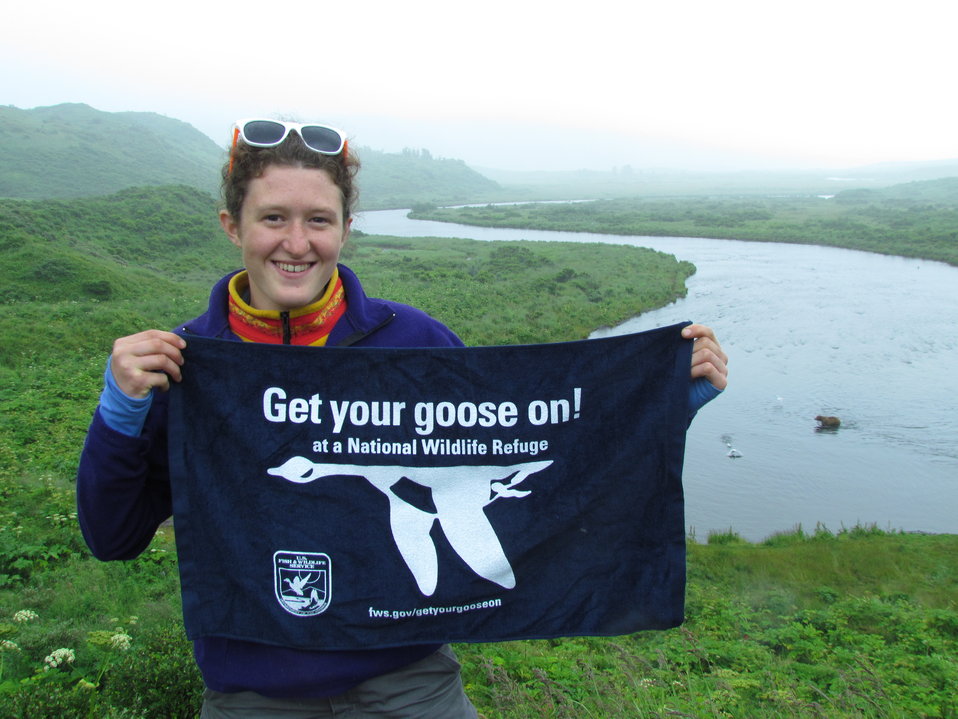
Get Your Goose On! - Alaska Style

YCC worker Iris Blakeslee with Kodiak Brown Bear in background.

Credit: Shelly Lawson / USFWS

The Kodiak National Wildlife Refuge is a United States National Wildlife Refuge in the Kodiak Archipelago in southwestern Alaska, United States.

The Kodiak National Wildlife Refuge includes the southwestern two-thirds of Kodiak Island, Uganik Island, the Red Peaks area of Afognak Island and all of Ban Island in the archipelago. It encompasses 1,990,418 acres (8,054.94 km2).[2] The refuge is administered from offices in Kodiak.

The refuge contains seven major rivers and about 100 streams. It is a spawning ground for all six species of Pacific Ocean salmon, trout and several other fish species, as well as a nesting ground for 250 species of bird, many of which feed on salmon. The refuge has only six native species of mammals: Kodiak brown bear, red fox, river otter, ermine, little brown bat and tundra vole. The non-native mammals Sitka deer, mountain goat, Roosevelt elk, snowshoe hare and beaver were introduced to the archipelago between the 1920s and 1950s and are now hunted and trapped.

The climate of the refuge is that of southern Alaska, mild and rainy. Many areas in the refuge are densely forested with Sitka Spruce at lower elevations. There are grasslands in drier areas and at higher elevations. The refuge contains several small glaciers.